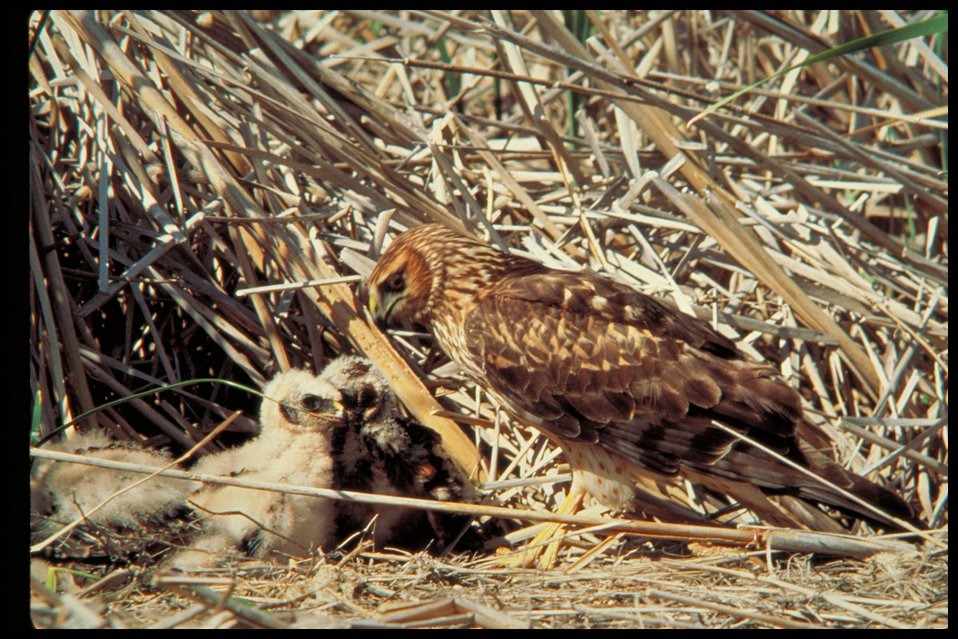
Northern Harrier female with young chick Birds of Prey National Conservation Area BOP Owyhee Field Office LSRD Lower Snake River District